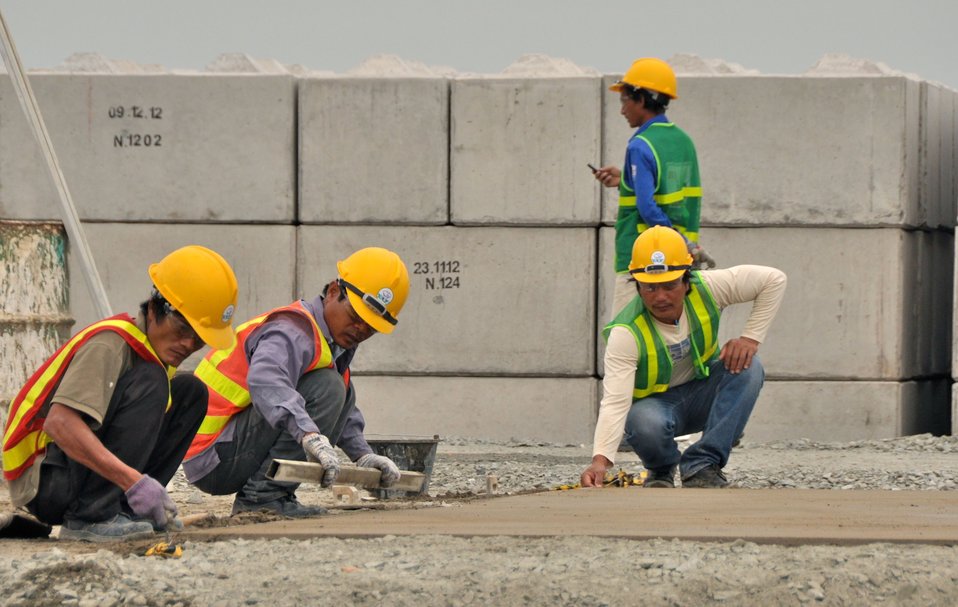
Site Preparation for Environmental Remediation of Dioxin Contamination at Danang Airport

Danang Airport, January 22, 2013